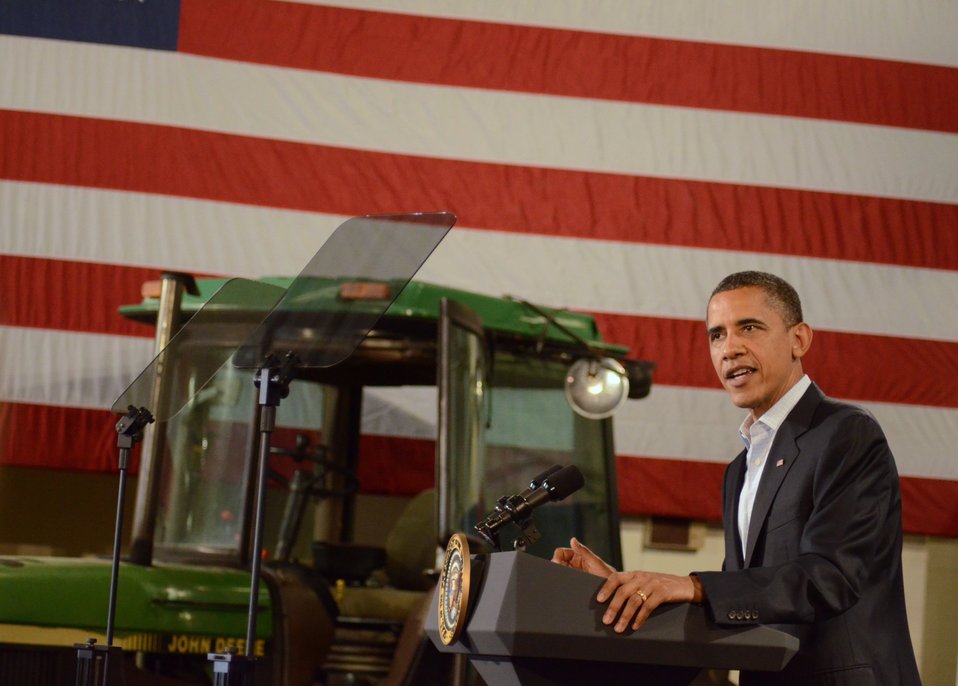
President Barack Obama speaking at the Northeast Iowa Community College, for a White House Rural Economic Forum on Tuesday, Aug. 16, 2011. The President’s visit will focus on agriculture’s contribution to the national economy, and how to create more jobs in rural America.